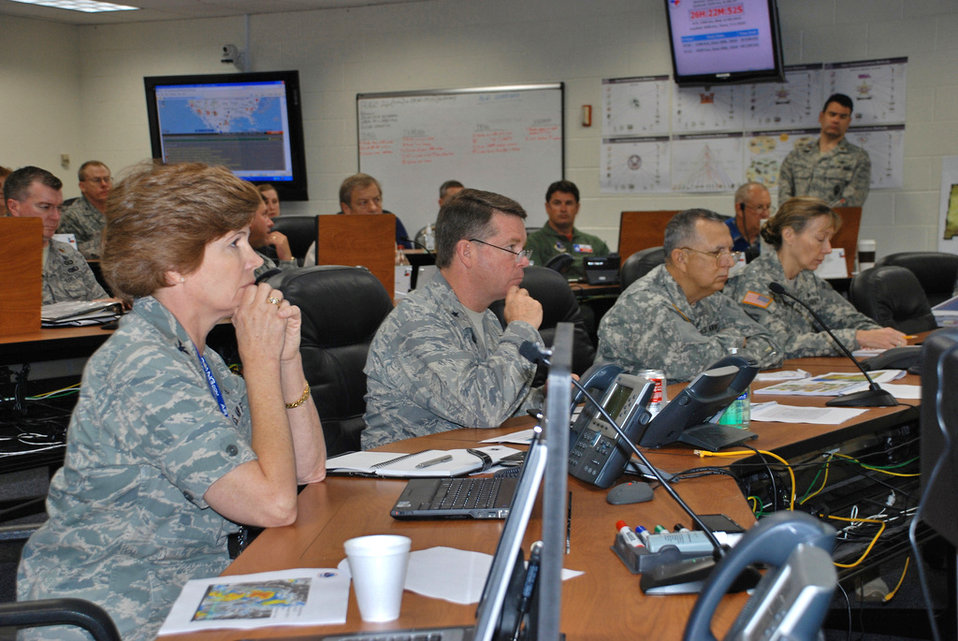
Texas Guard prepares for season's first hurricane

Col. Connie McNabb (left to right), Brig. Gen. John Nichols, Army Maj. Gen. Jose Mayorga and Army Brig. Gen. Joyce Stevens listen to predictions for Tropical Storm Alex in the Joint Emergency Operations Center June 29, 2010, at Camp Mabry, Texas. Colonel McNabb is the chief of the Texas Joint Staff. General Nichols is the commander of the Texas Air National Guard. General Mayorga is the Texas adjutant general. General Stevens is the commander of the Texas Army National Guard.